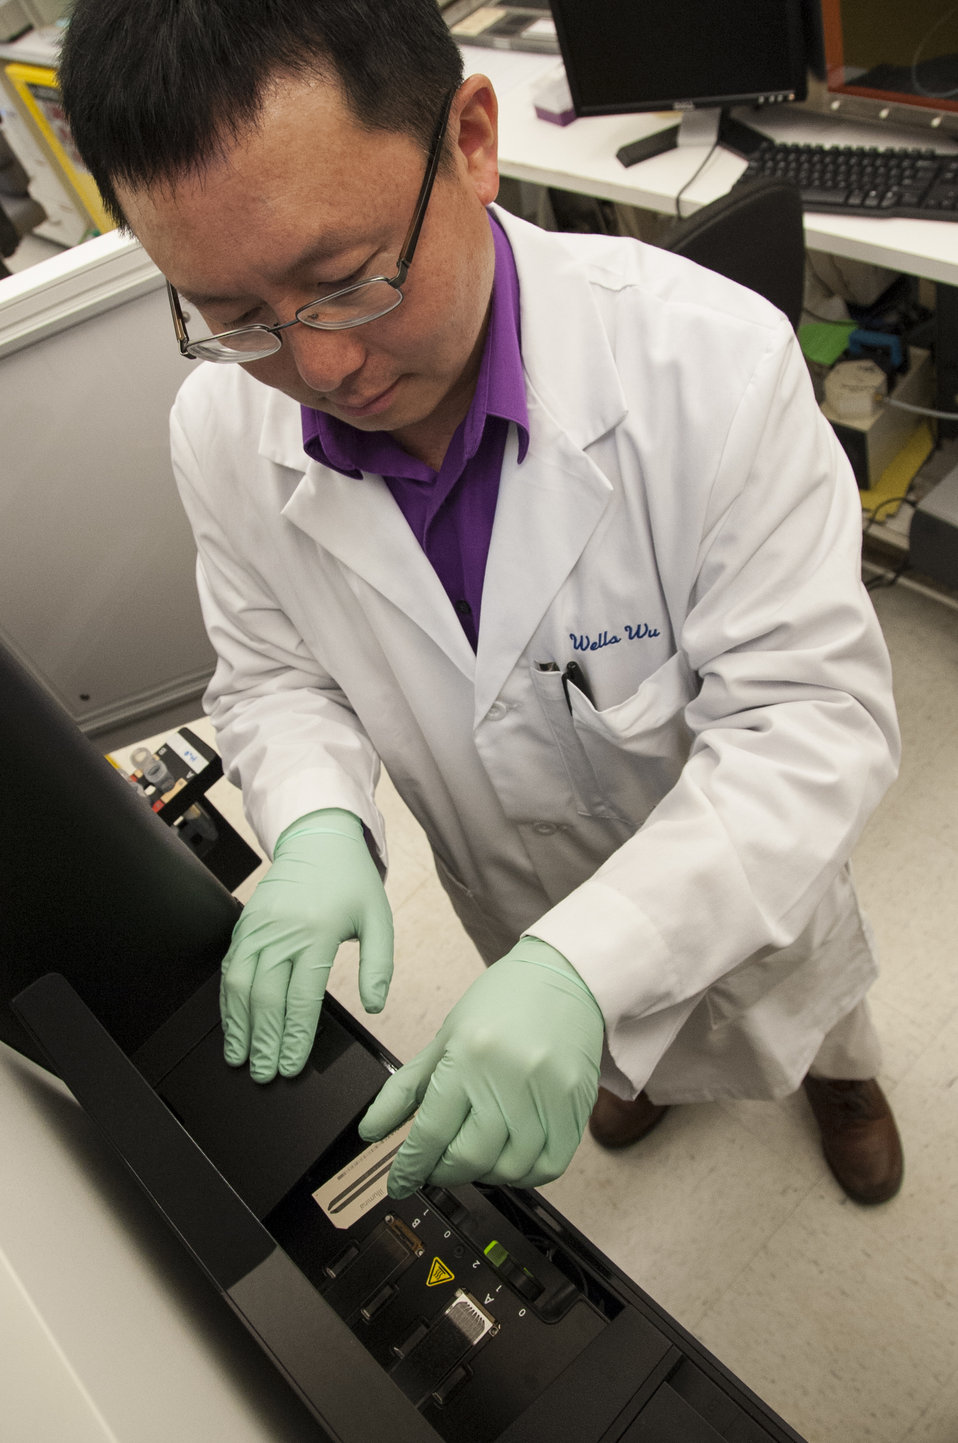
Bio Threats: FDA's A-Team (6322)

Zuben Sauna, Ph.D., principal investigator in CBER’s hemostasis laboratory, and chemist Wells Wu, Ph.D., (shown) are exploring the shapes of proteins used in medical treatments to determine why they prompt a strong reaction from the body’s immune system. Suspecting that the shapes may be part of the problem, the researchers are using tiny pieces of DNA-like molecules called aptamers to probe the proteins. Hemostasis is the process of getting bleeding to stop and the antibodies that cling to these proteins are causing life-threatening complications, particularly in the treatment of bleeding disorders.

Scientists at FDA’s Center for Biologics Evaluation and Research (CBER) work to facilitate the development of safe, effective treatments that would neutralize biological threats to public health and security. CBER regulates preventive and therapeutic vaccines, blood and blood products, human cell and tissue-based products, gene therapies and xenotransplantation. To learn more, read this FDA Consumer Update:

• FDA Teams Prepare for Biological Threats